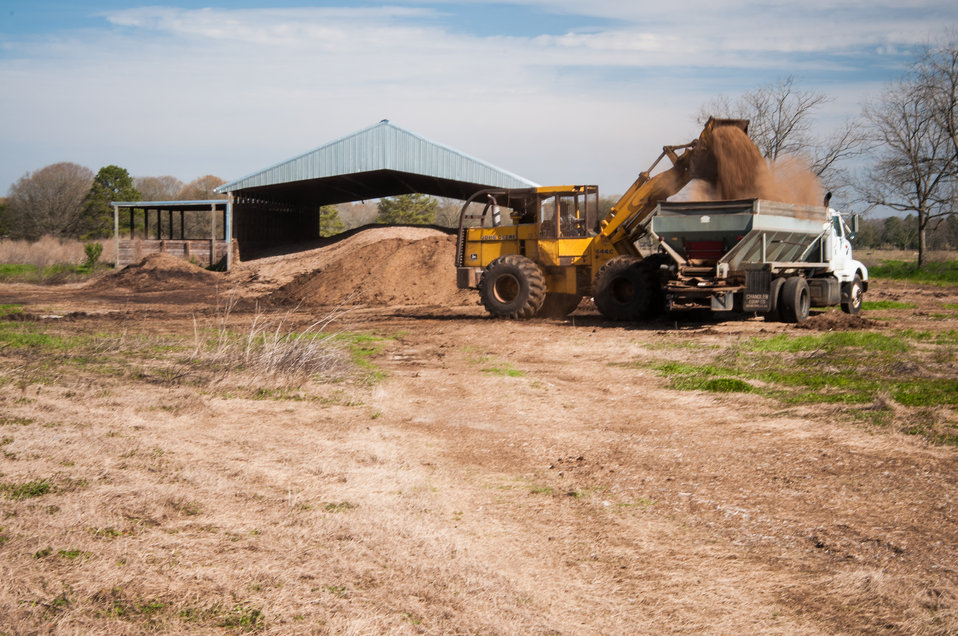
Poultry litter from AKC Poultry in Arlington, GA is loaded into a truck to be delivered to a fertilizer treatment facility on Mar. 7, 2013. AKC was able to address their nutrient management and water quality concerns with a Stackhouse to better manage poultry litter through a U.S. Department of Agriculture (USDA) Natural Resources Conservation Service (NRCS) Environmental Quality Incentives Program (EQIP) contact. Stackhouses get the poultry litter off the ground so it will not contaminate water. The USDA Strike Force Initiative has designated Baker County, GA as a Strike Force county selected to receive assistance to relieve persistent poverty in historically high-poverty counties.